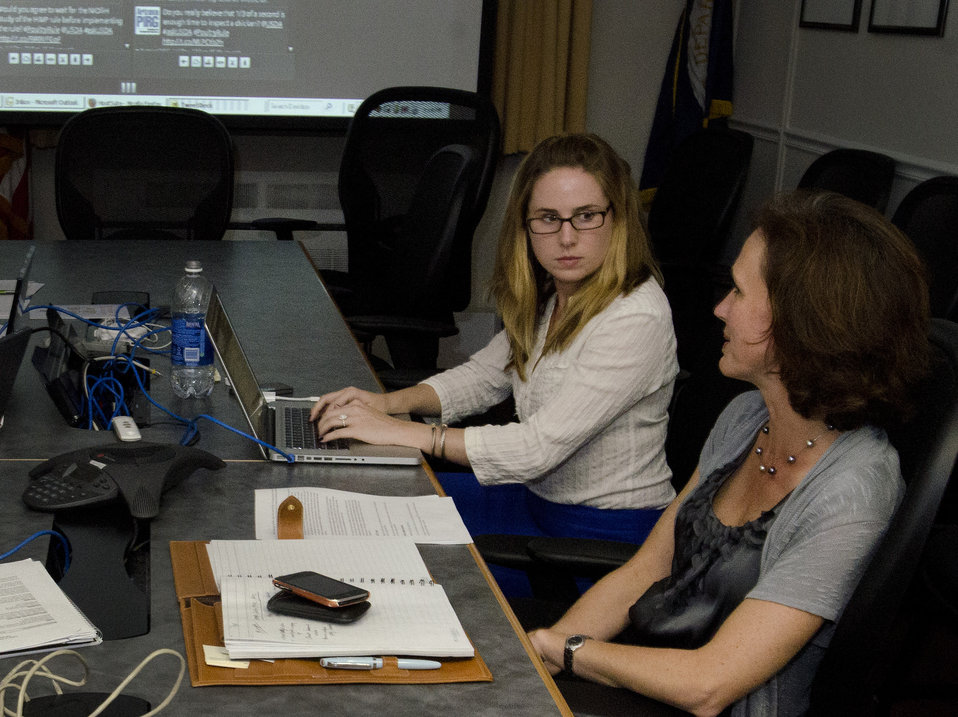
Dr. Elisabeth Hagen, Under Secretary for Food Safety and Inspection Service, (right) assisted by Web Communications Director Amanda Eamich, holds virtual office hours on Twitter for 'It’s National Food Safety Education Month!' on Thursday, September 27, 2012 at the U.S. Department of Agriculture in Washington, D.C.